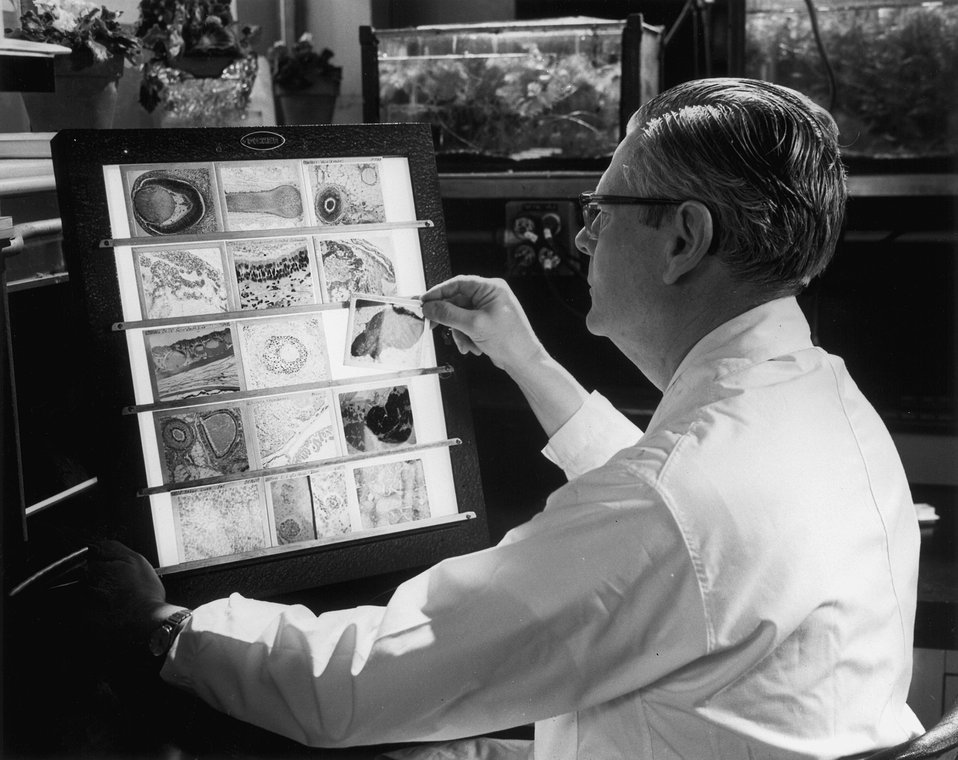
Biologist at Oak Ridge National Laboratory examines stained animal tissues mounted as lantern slides. c. 1970